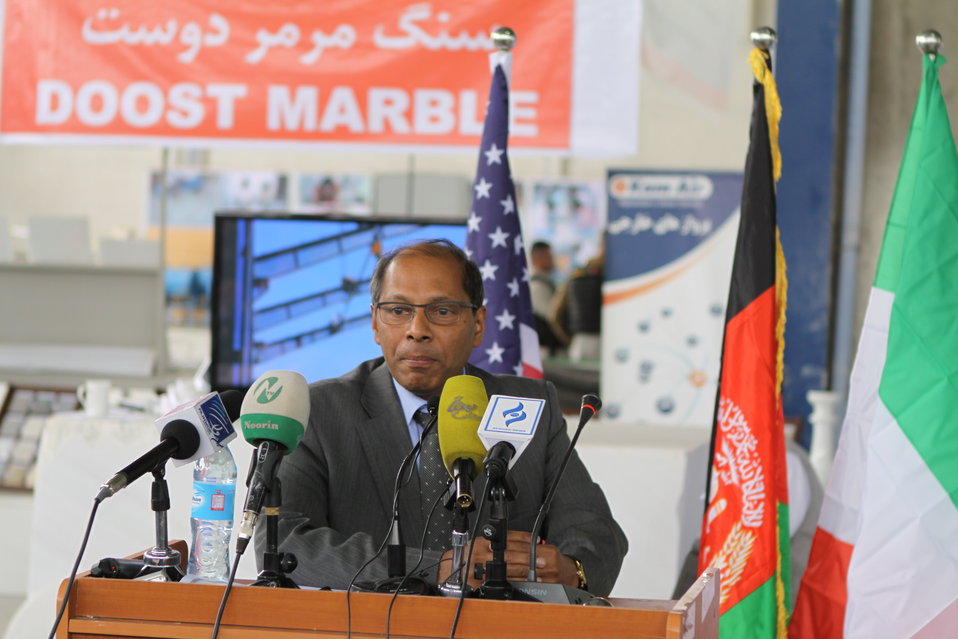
100525 Hirat Marble Conference 259